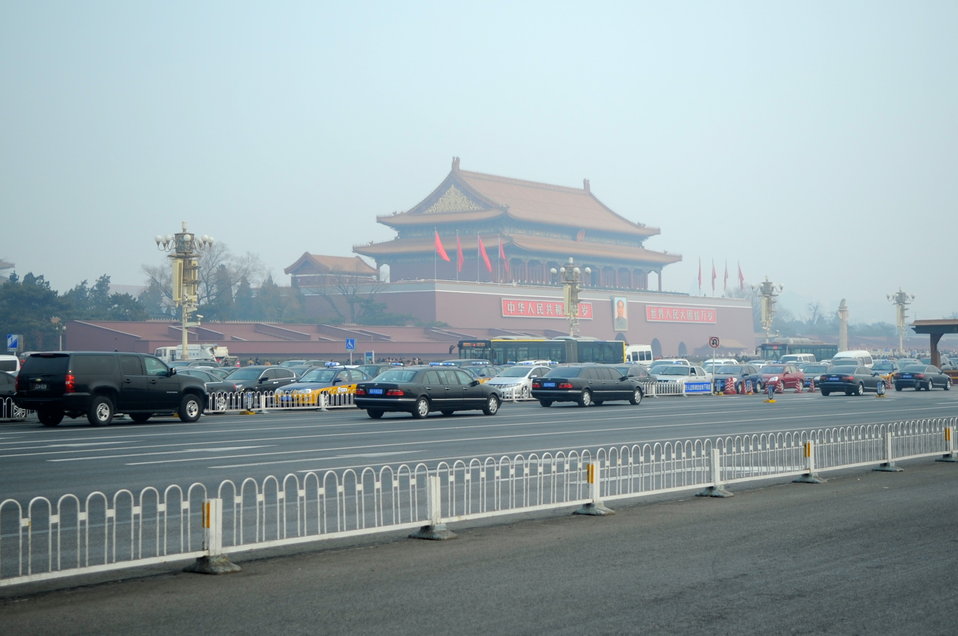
Secretary Kerry's Motorcade Passes Main Gate to China's Forbidden City

The motorcade carrying U.S. Secretary of State John Kerry passes the main gate of China's Forbidden City while driving between high-level government meetings in Beijing, China on February 14, 2014.